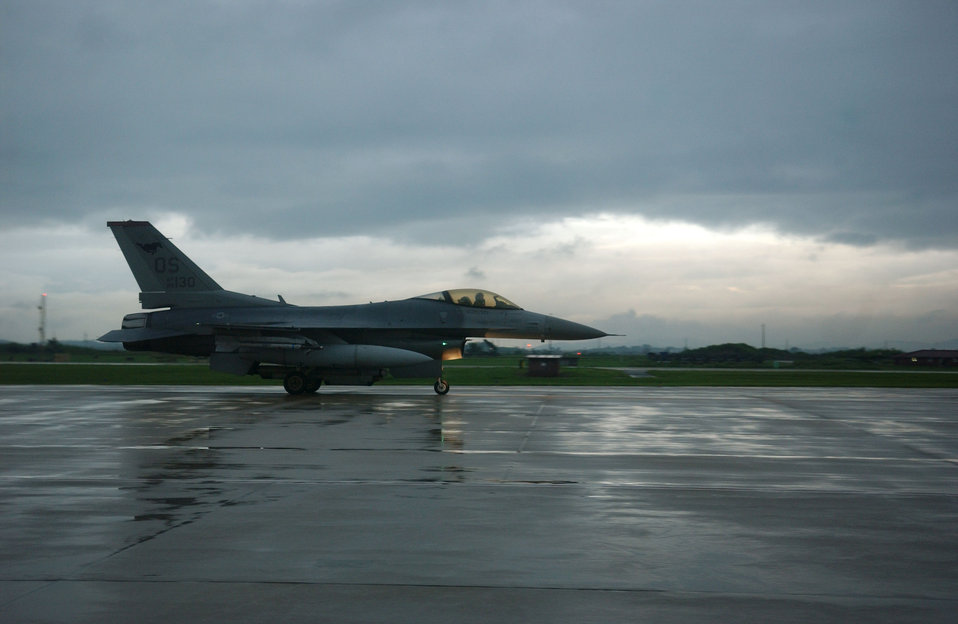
Beverly Bulldog at Osan

An F-16 Fighting Falcon returns from a sortie during Exercise Beverly Bulldog at Osan Air Base, South Korea, on July 28.